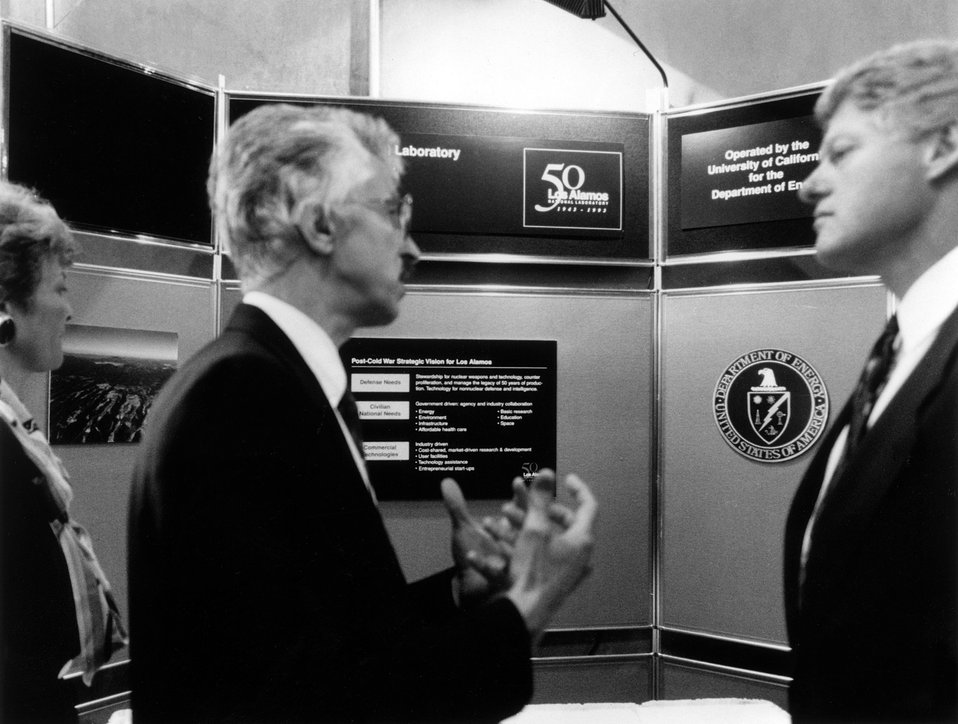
Sigfried Hecker, Director of Los Alamos National Laboratory with Secretary Hazel O'Leary and President William Clinton.